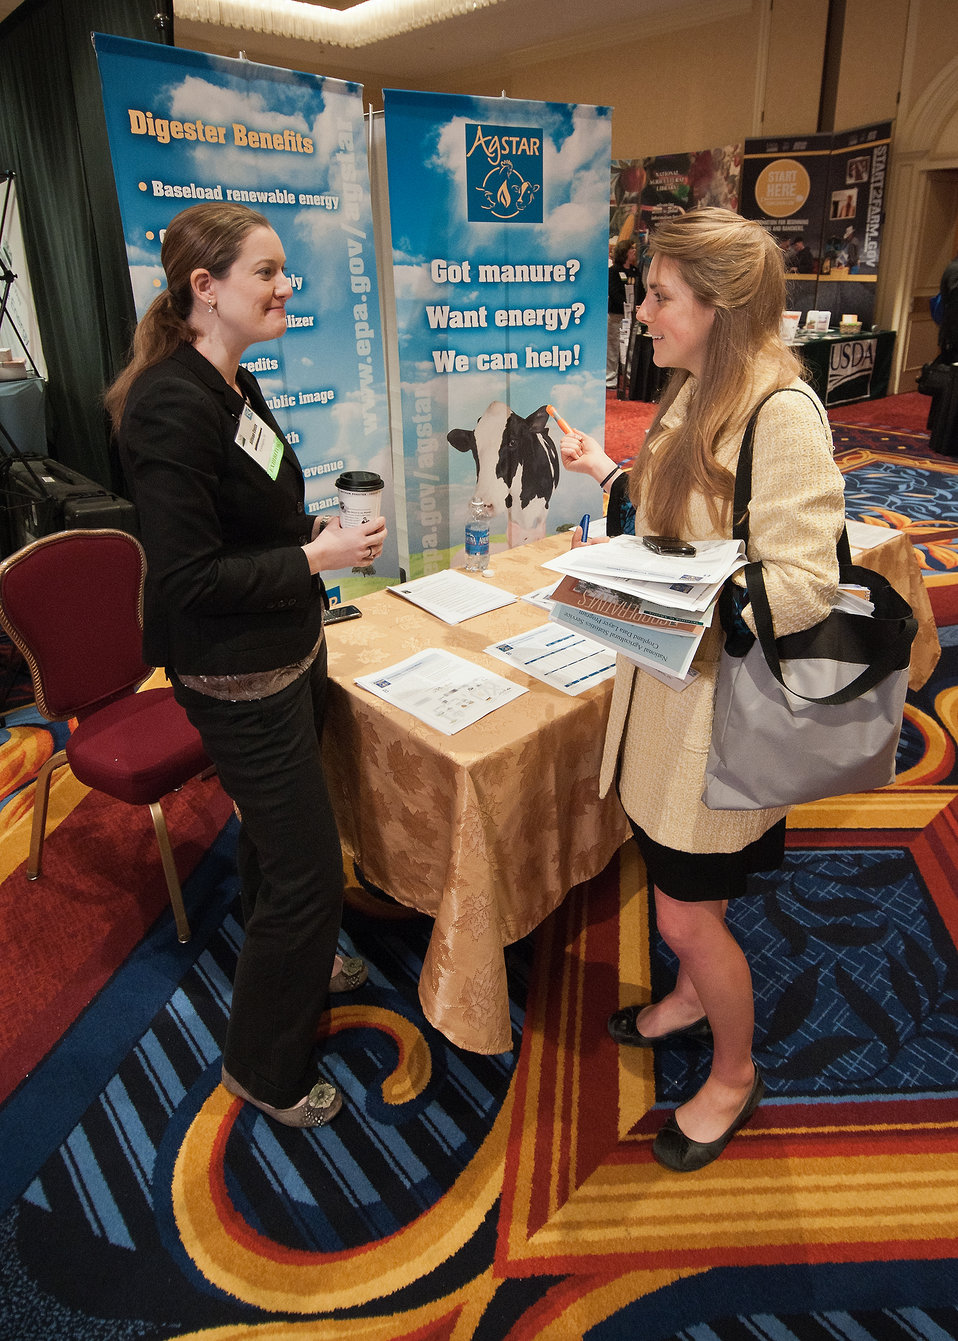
Alison Costa (left), AgStar and Colleen Rossier, Office of the Chief Scientist, United States Department of Agriculture discuss the volunteer Environmental Protection Agency program jointly operated with USDA Rural Development and Natural Resources Conservation Service using manure as a renewable energy resource at the 2012 Agricultural Outlook Forum, “Moving Agriculture Forward, Growing, Innovating and Celebrating 150 Years” held at the Crystal gateway Marriott Hotel Arlington, Virginia, Friday, February 24, 2012. This year's forum coincides with the 150th anniversary of the Department of Agriculture addressing economics, marketing, research, food safety, nutrition, conservation, rural development, alternative energy, trade and many other agricultural issues.